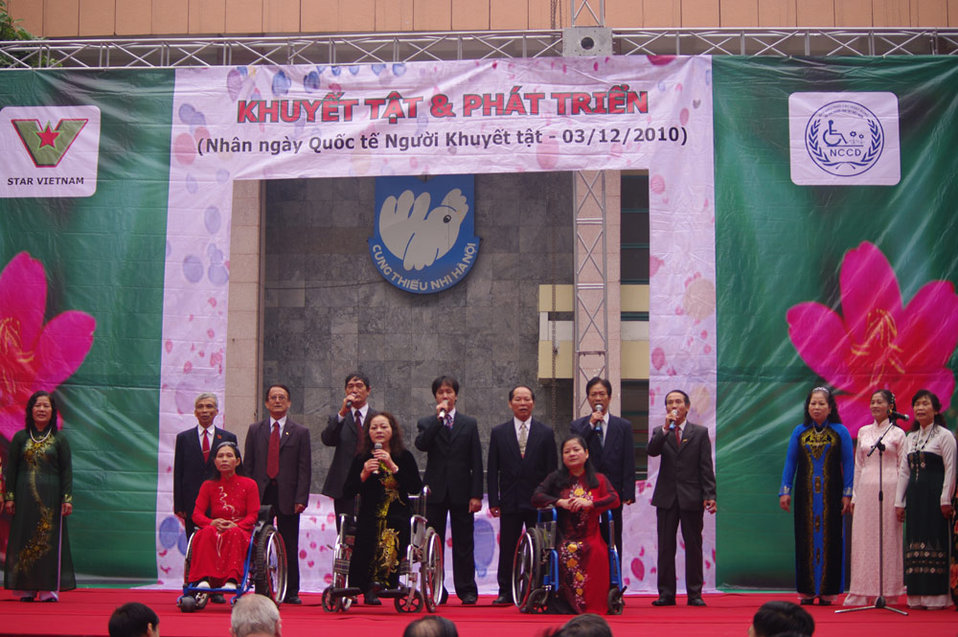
International Day of Persons with Disabilities 2010